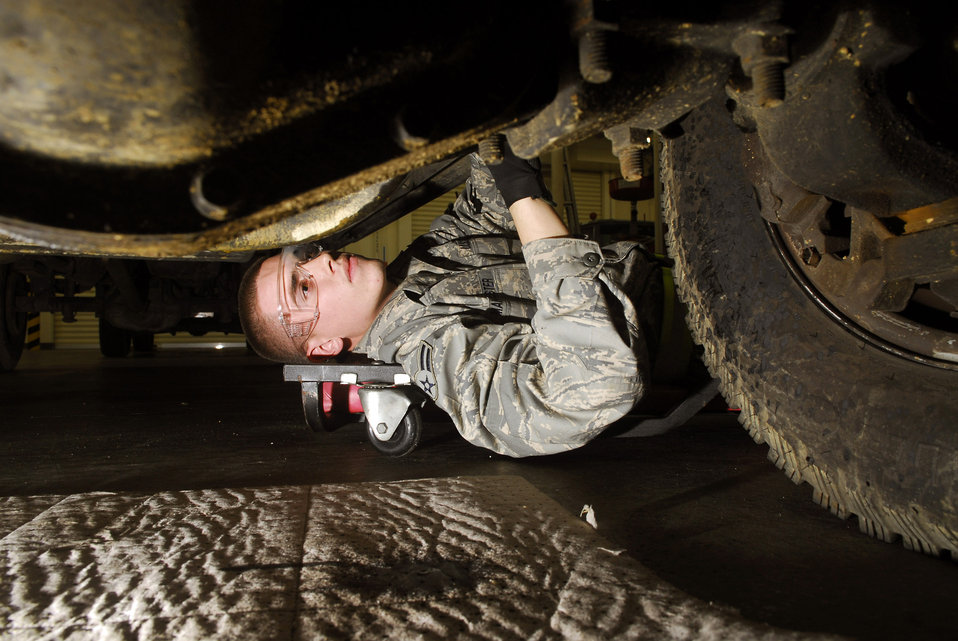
Getting the job done right

Airman 1st Class Derek Manchester inspects the undercarriage of an F-350 truck March 11 before replacing a brake line during an operational readiness inspection at Kadena Air Base, Japan. Pacific Air Forces is conducting the inspection this month to validate the mission readiness of the 18th Wing.